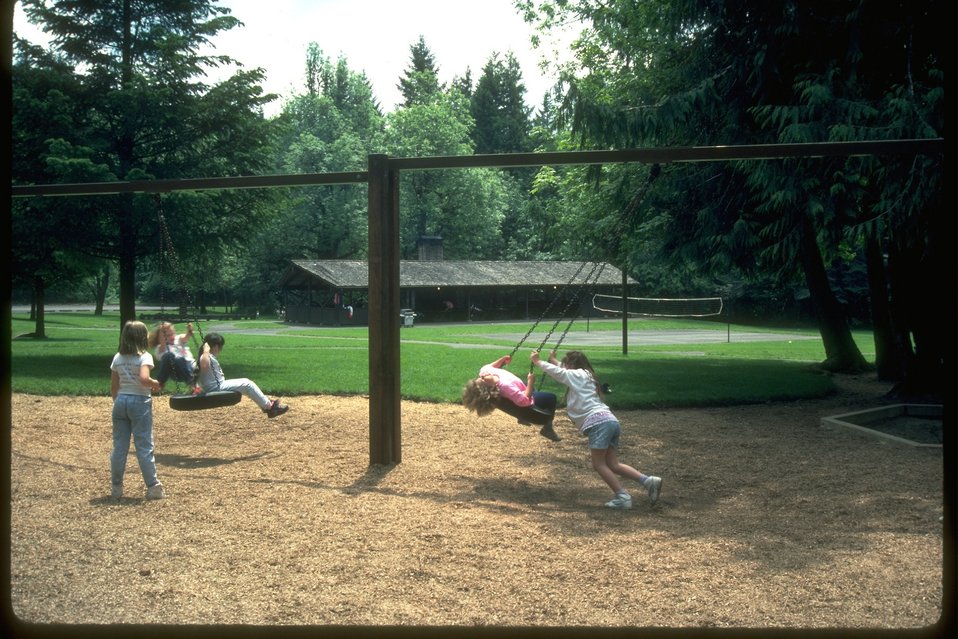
Playground at Shotgun Park.